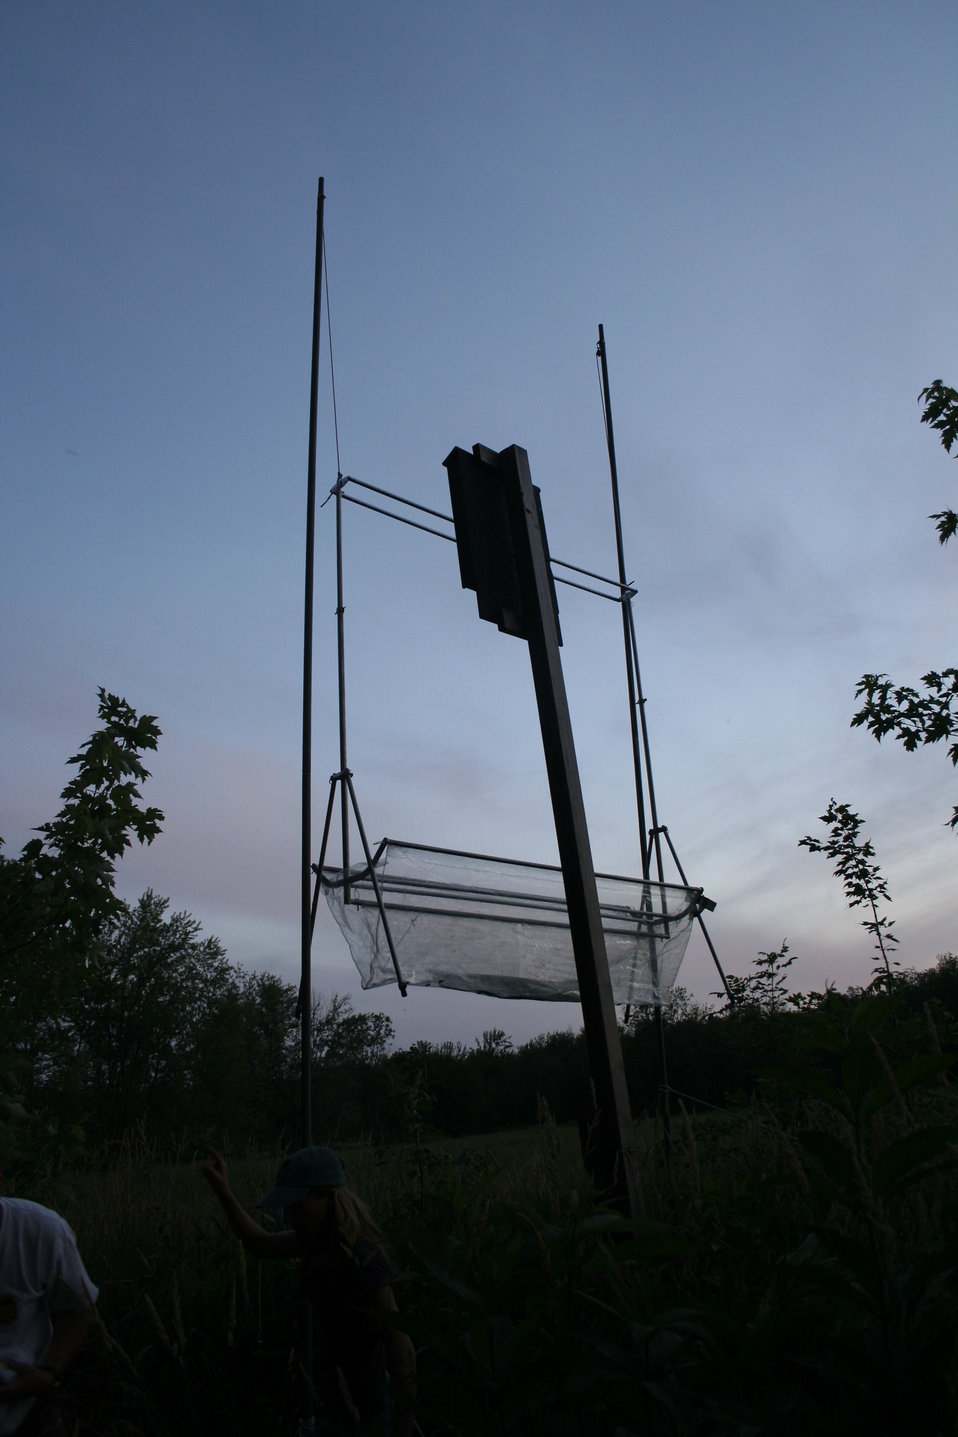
Harp trap and bat house

Biologists use a harp trap to capture bats exiting the bat house